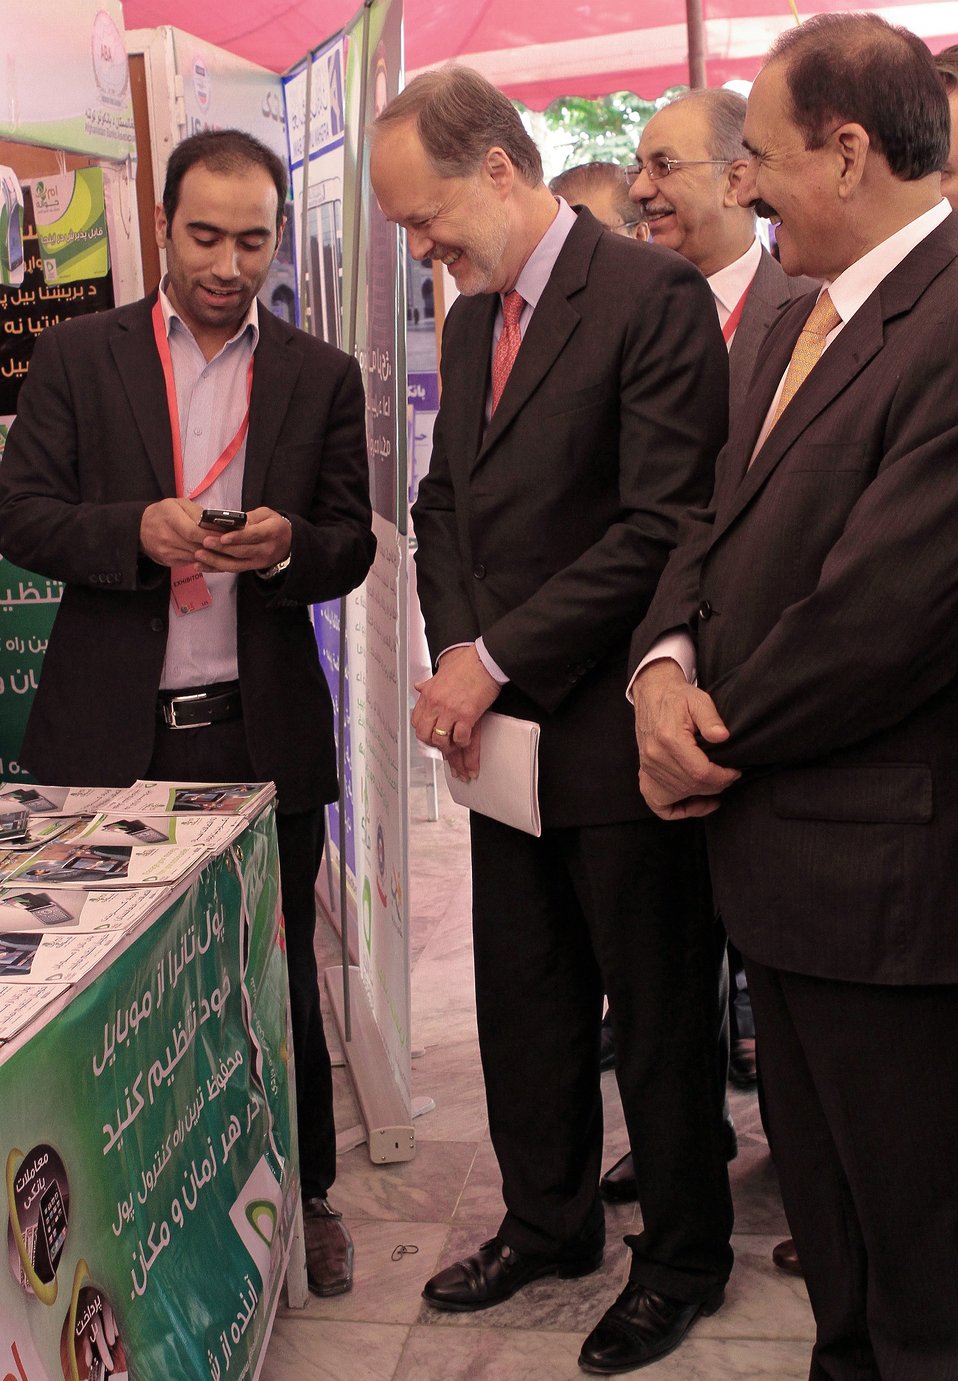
Access to Finance Exhibition in Kabul

U.S. Ambassador James B. Cunningham talks with exhibitors at the Second Access to Finance Exhibition in Kabul on Tuesday, October 29, 2013. Thousands of business representatives from across Afghanistan attended the exhibition promoting branchless banking and electronic payments.